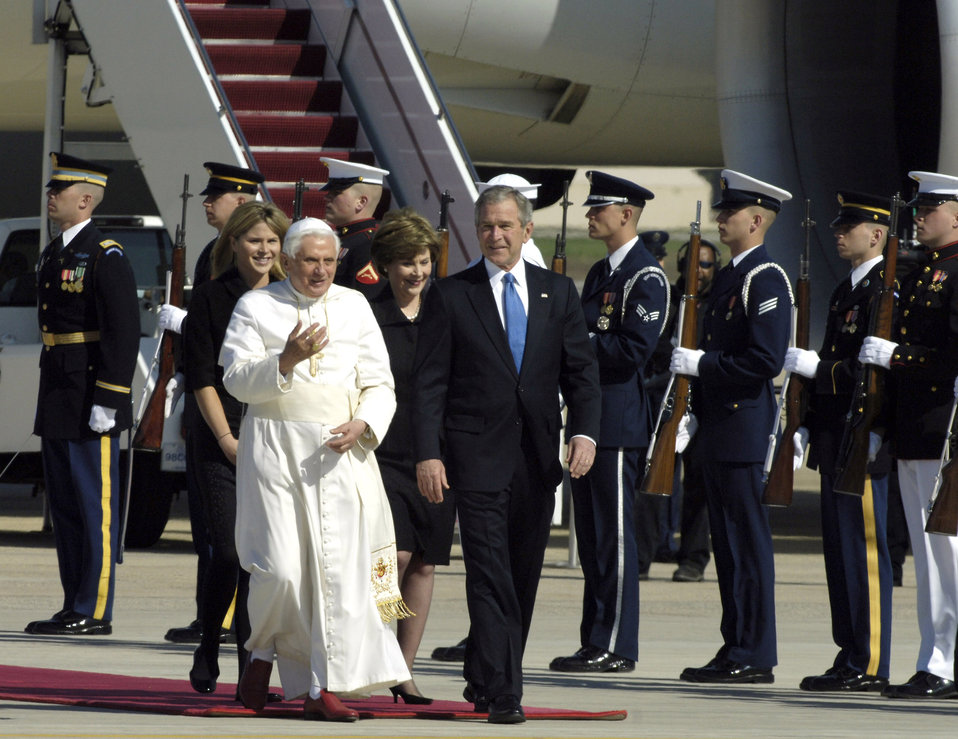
Pope arrives at Andrews

Pope Benedict XVI talks to President George W. Bush upon his arrival as he is escorted by a joint honor guard April 15 at Andrews Air Force Base, Md. The pope is visiting the United States for a week and will meet with President Bush at the White House, address the presidents of Roman Catholic colleges and universities, and celebrate Mass at Nationals Park in Washington, D.C., and Yankee Stadium in New York City. The pontiff was selected as the 265th pope on April 19, 2005.